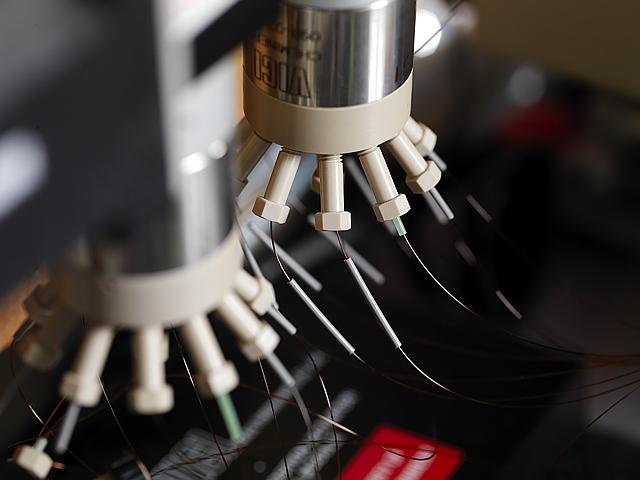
PNNL researchers developed a new technique using mass spectrometers that matches sensitivity and accuracy of antibody-based clinical tests to identify protein biomarkers associated with cancer and other diseases.

The new technique is called PRISM, could speed drug discovery and basic biology research.